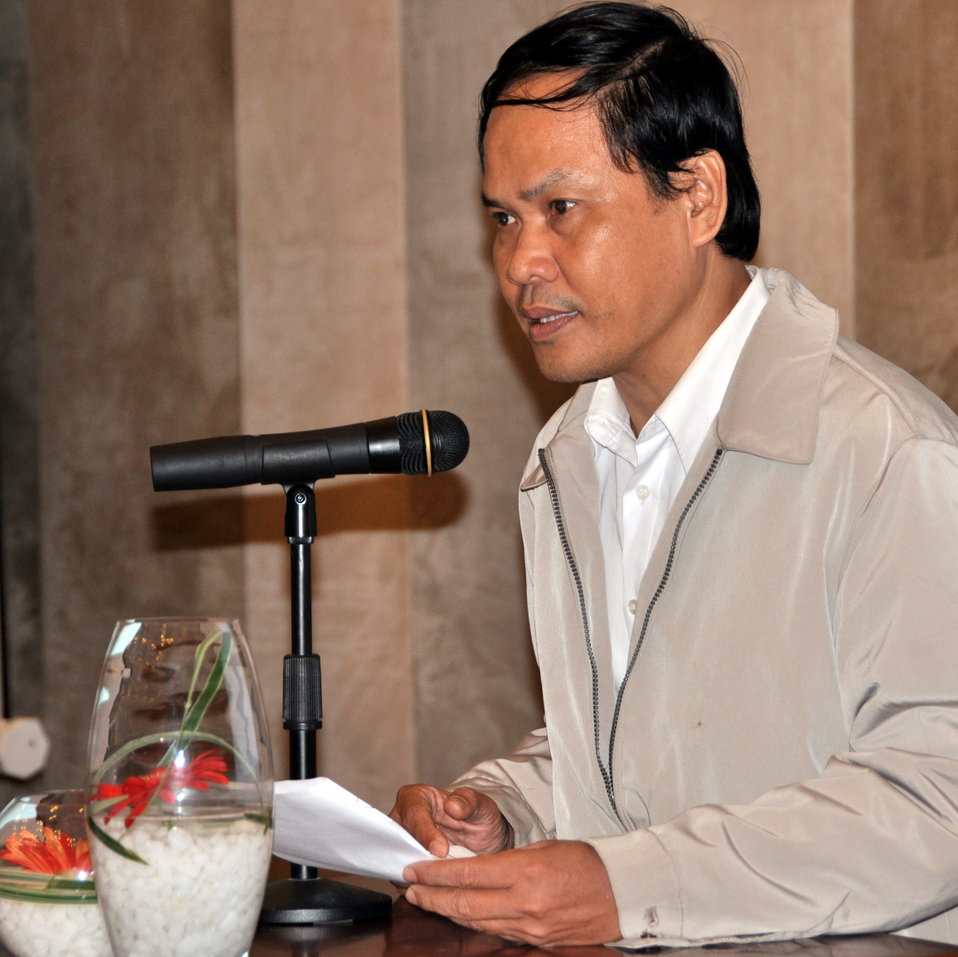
Mr. Nguyen Dinh Anh, vice director of the Danang Department of Natural Resources and Environment, Addresses the Danang Stakeholder Meeting

Environmental Remediation of Dioxin Contamination at Danang Airport

Danang, Vietnam
January 23, 2013
Photos @USAIDVietnam